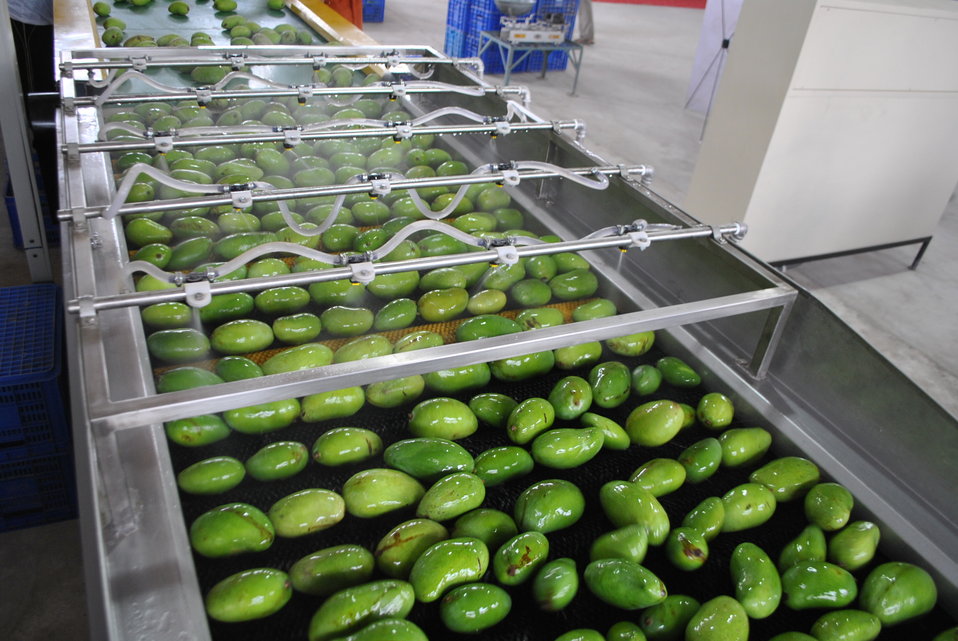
USAID supporting Pakistan's mango sector

USAID is helping 15 mango farms in Sindh and Punjab to install processing equipment to prepare mangoes for export to international markets, including Middle East, South East Asia and Europe.